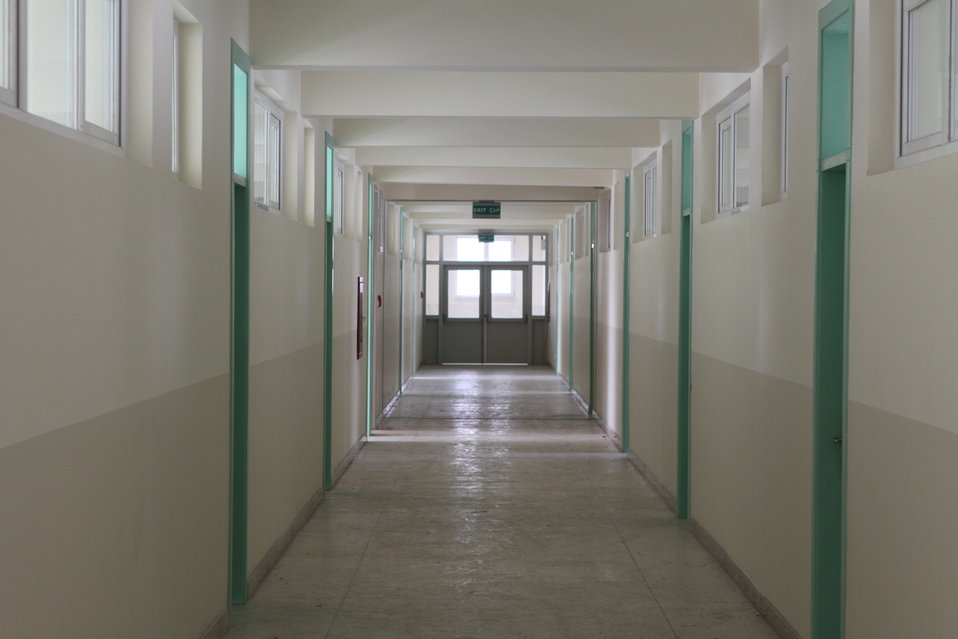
Ghazi high school , Kabul